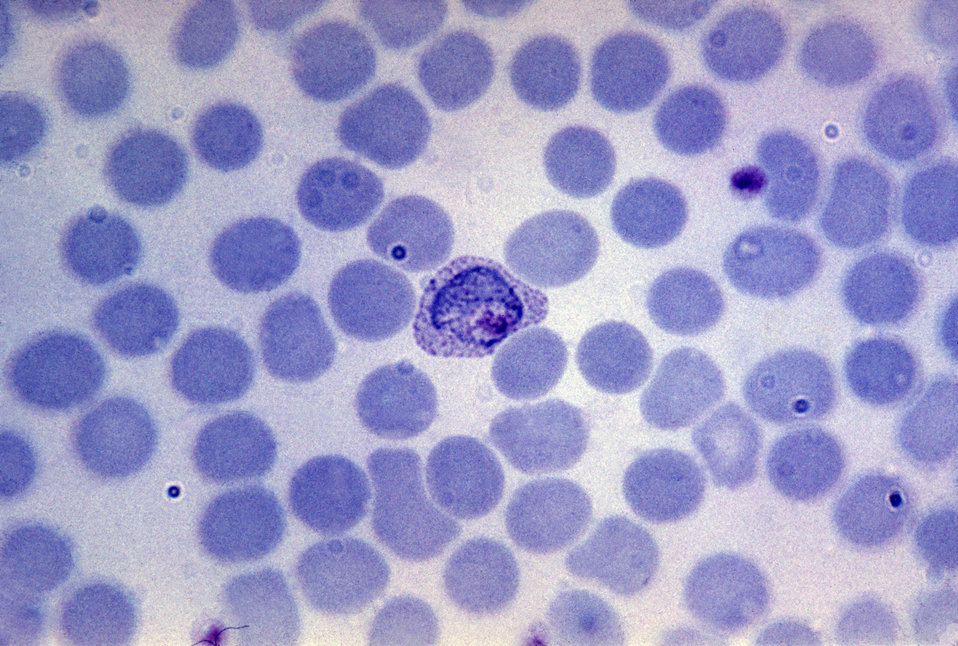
Blood smear showing growing trophozoite of Plasmodium vivax. Parasite